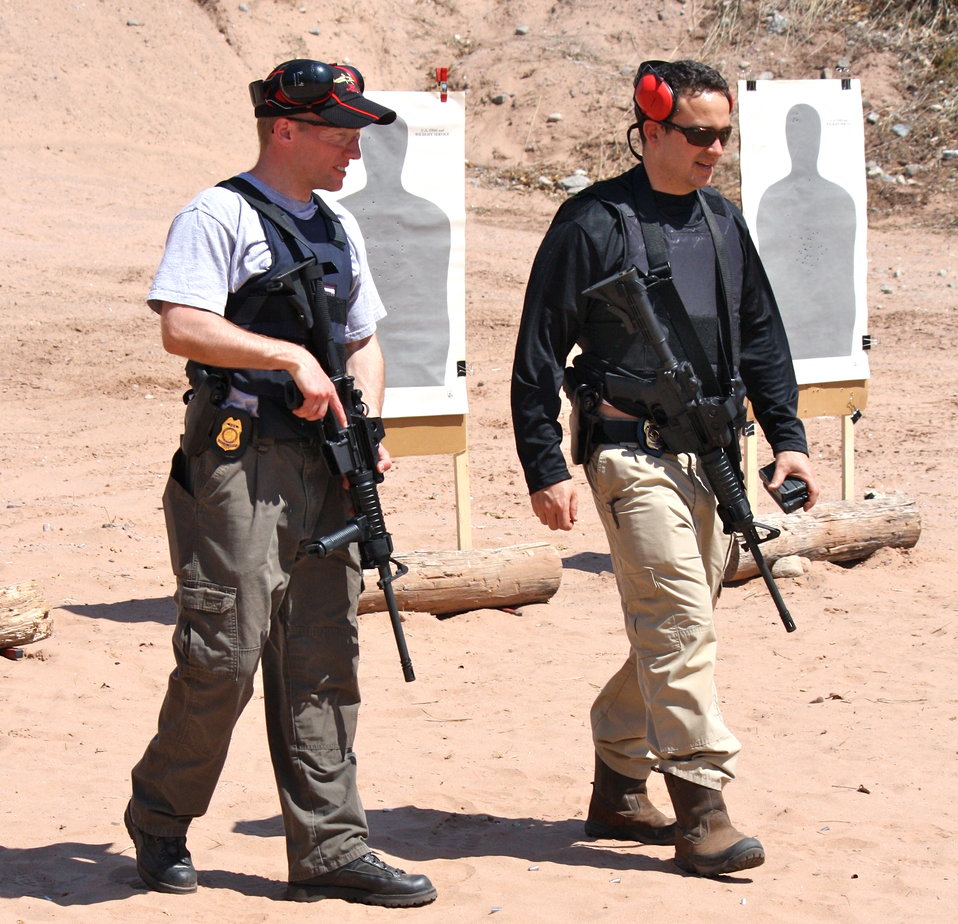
Agents Walking Away from Targets

Law Enforcement target practice at outdoor shooting range in Glastonbury, CT.